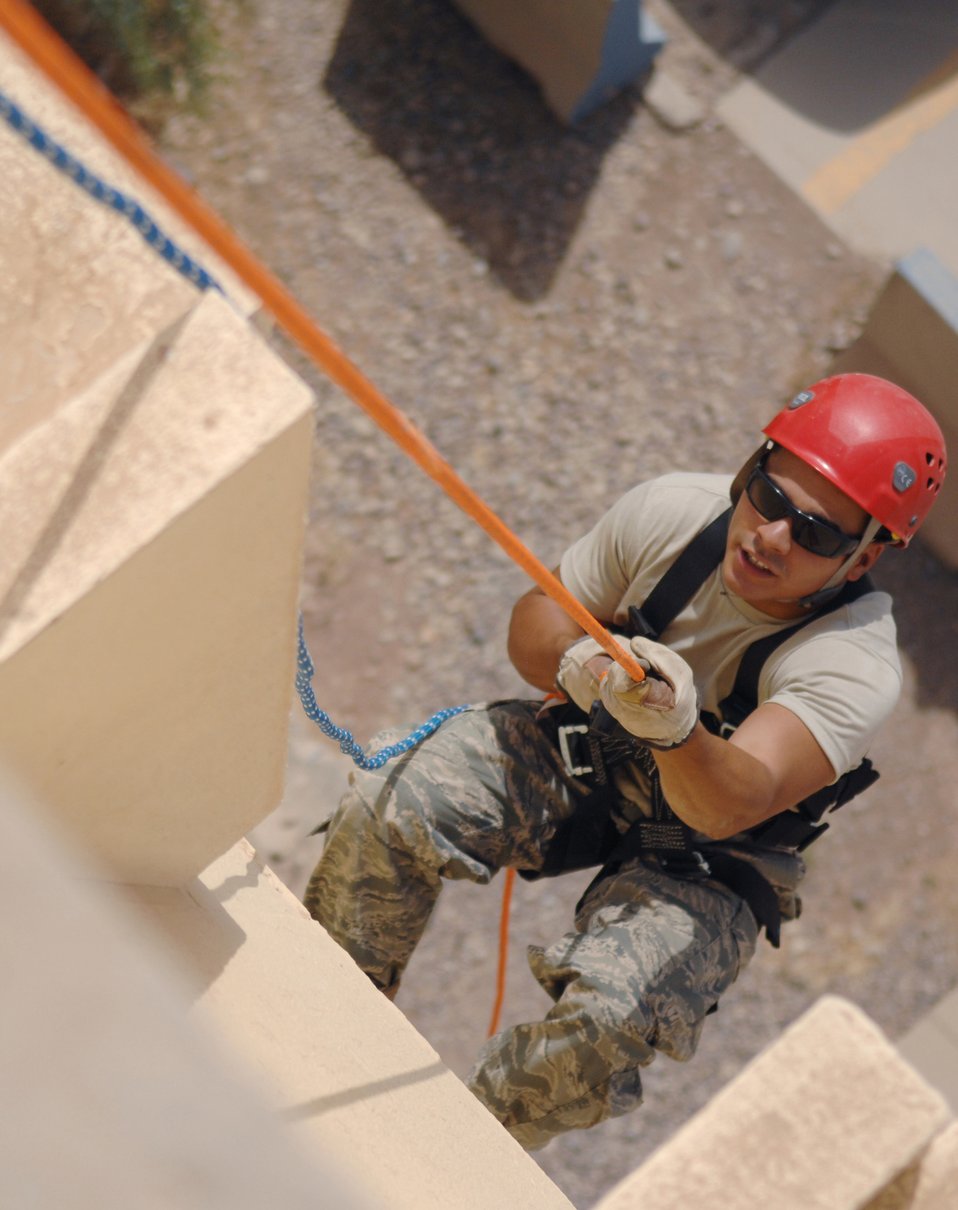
Balad firefighters rappel tower

Airman 1st Class Hector Garcia rappels down the side of the control tower during a training exercise Aug. 20, 2009, at Joint Base Balad, Iraq. He is a firefighter with the 332nd Expeditionary Civil Engineer Squadron.